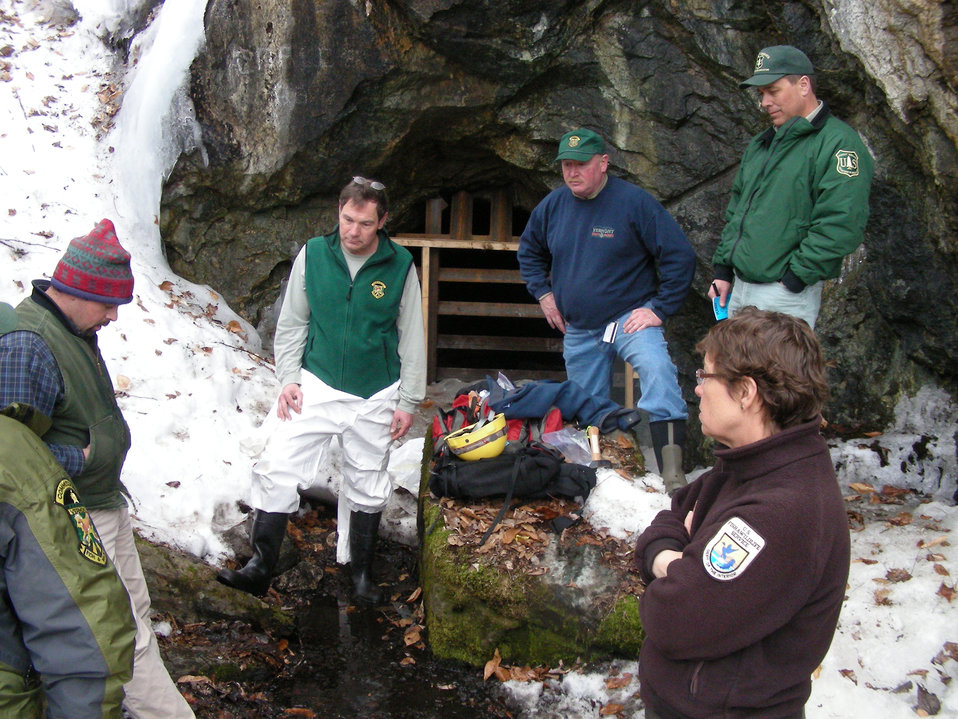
Biologists gather at mine entrance

Service and State biologists enter Greeley Mine, Vermont, March 26, 2009.